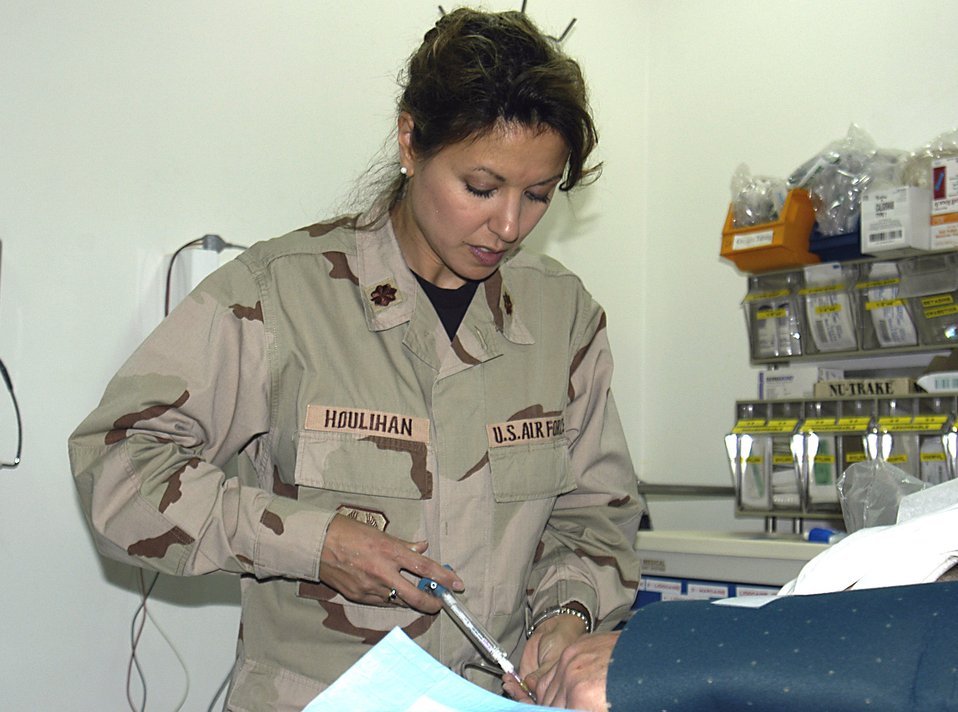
Airmen respond to bus accident

SOUTHWEST ASIA (AFPN) -- Maj. Sandi Houlihan gives pain relief medication to a patient involved in a bus accident. Major Houlihan is with the 386th Expeditionary Medical Group and deployed from Wright-Patterson Air Force Base, Ohio.